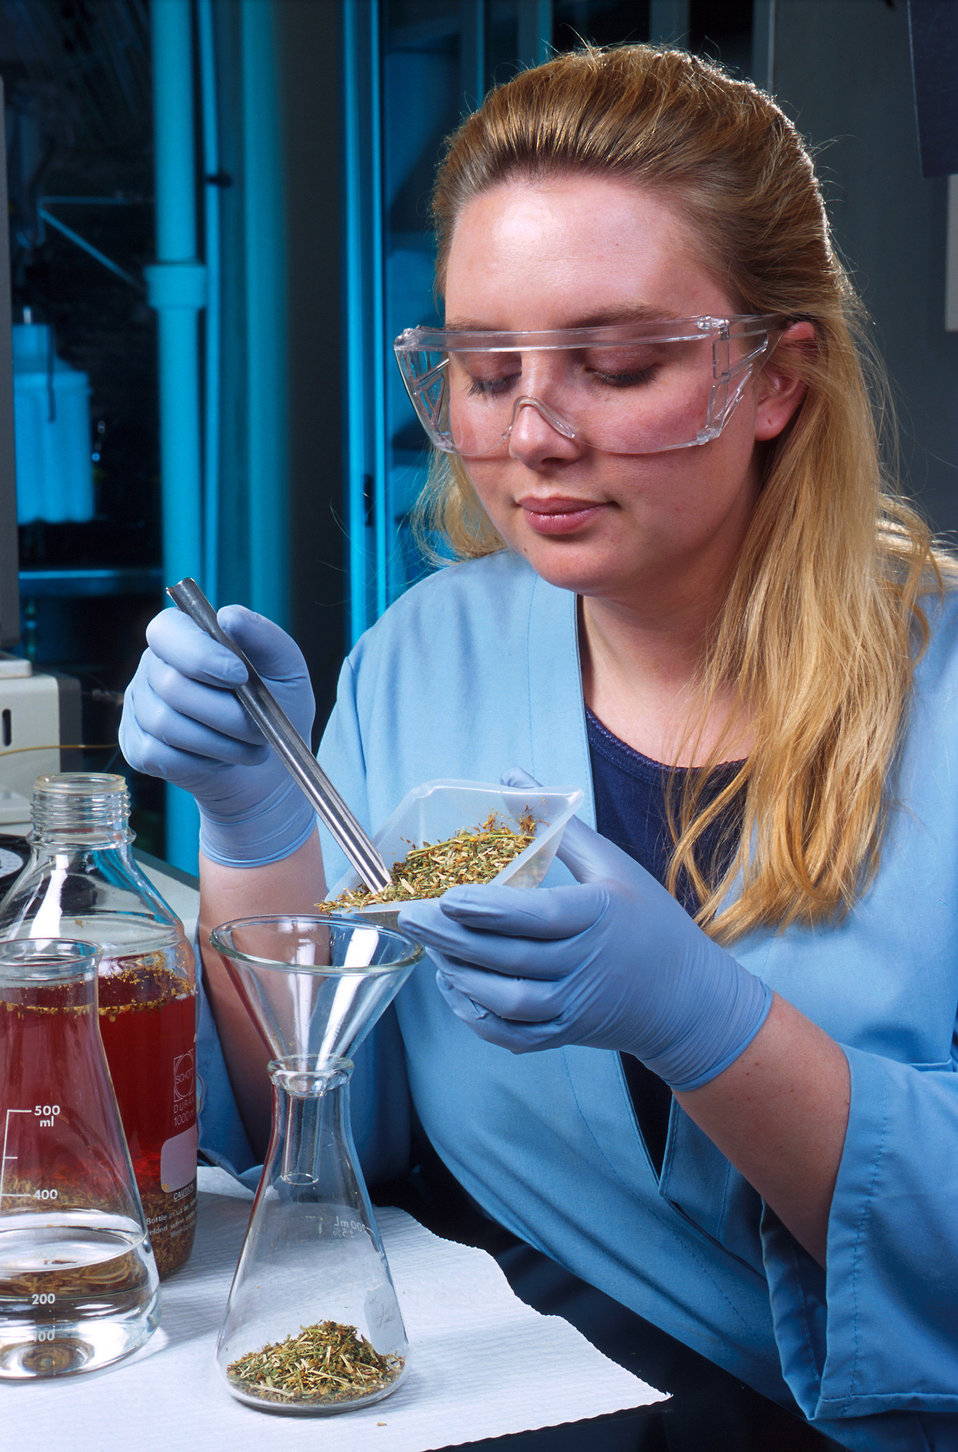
Cornell University graduate student Taran Sirvent prepares dried St. John’s Wort (Hypericum perforatum) for extraction and analysis in Ithaca, NY.